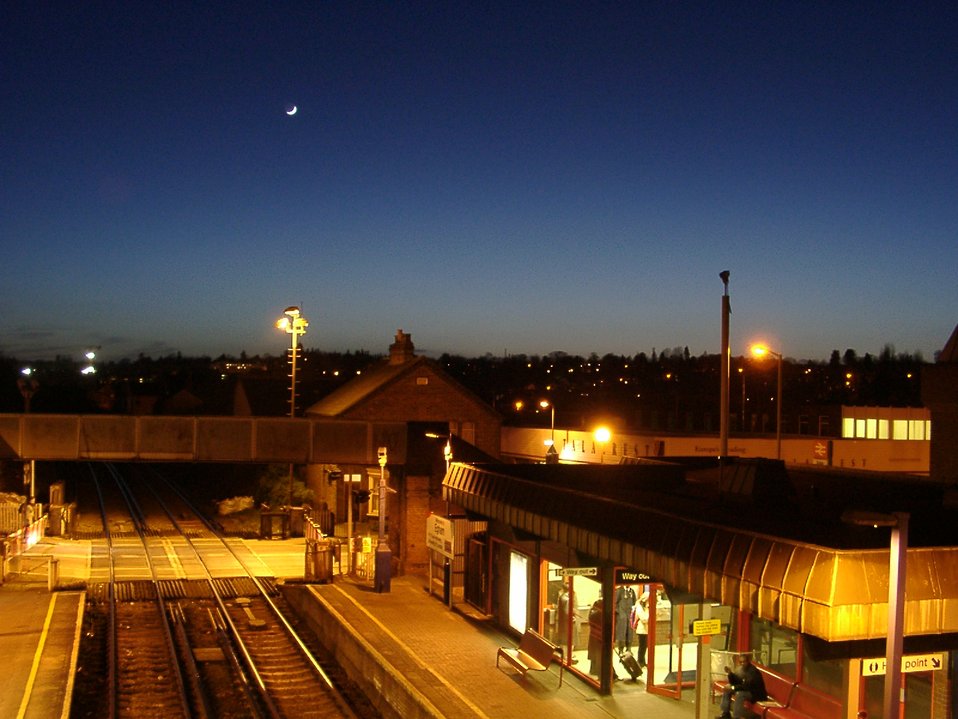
Français : Egham station, serving Royal Holloway.